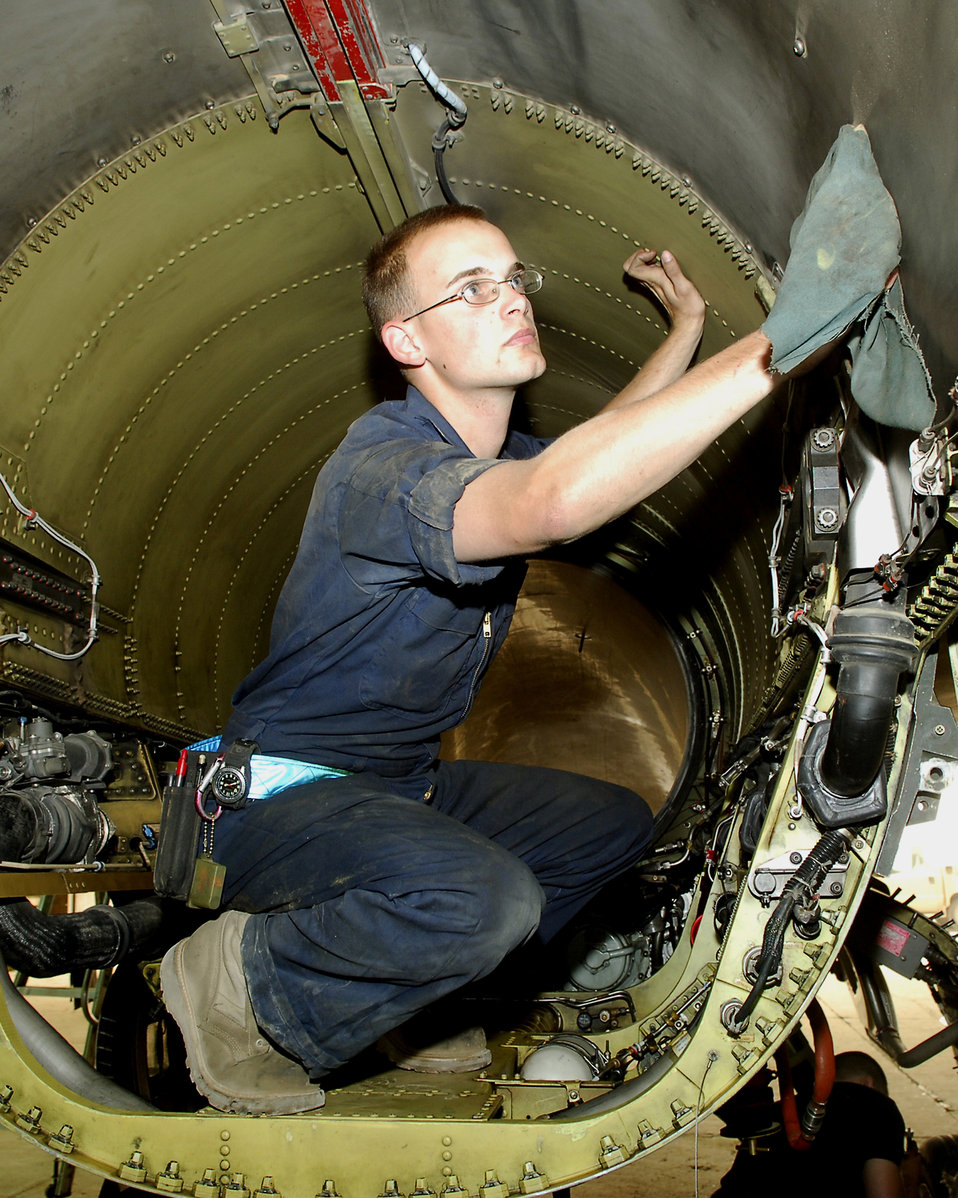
Aircraft maintainers contribute to GWOT milestone

Airman 1st Class Joseph Miller wipes down the inside of an F-16 Fighting Falcon at Balad Air Base, Iraq, April 19. Aircraft maintainers work around the clock performing scheduled maintenance and inspections on aircraft and making necessary repairs to keep the jets in top flying condition. Airman Miller is a 332nd Aircraft Maintenance Squadron F-16 Fighting Falcon crew chief.